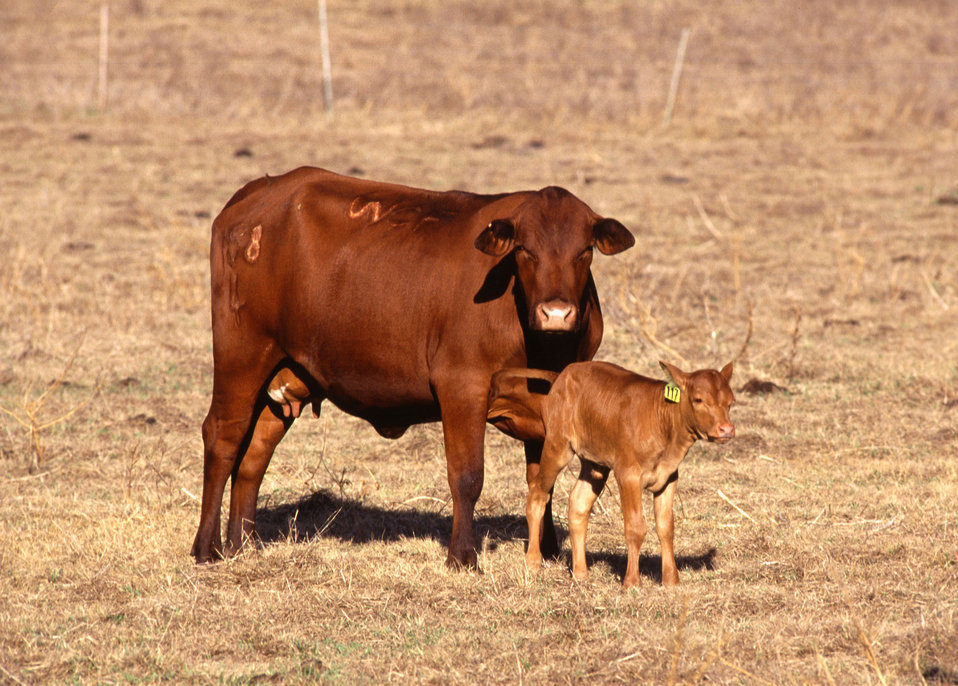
Senopol surrogate mother with Romosinuano embryo transfer calf stand in field on Feb. 23, 2012. A tropically adapted breed from the Caribbean, Senopols are increasingly popular throughout warmer U.S. regions.